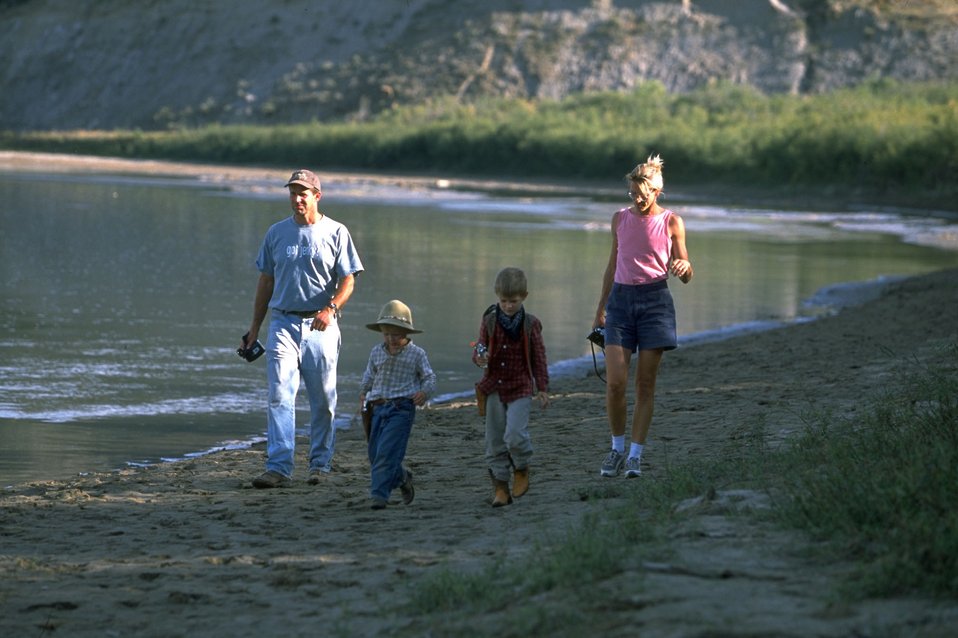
Enjoying the Upper Missouri River